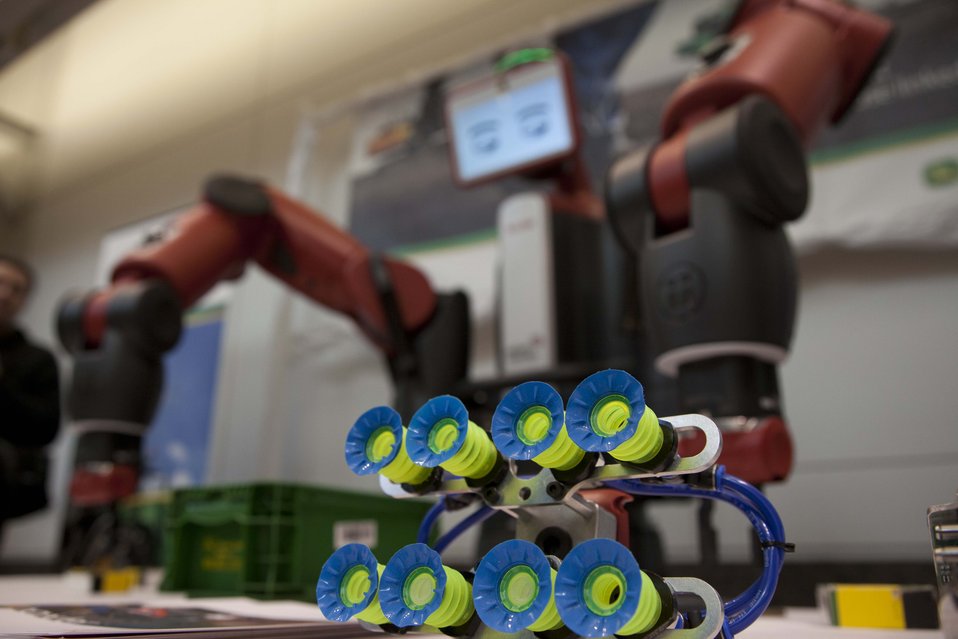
AEMC Summit

Baxter can be fitted with different hands to complete a variety of tasks. Pictured in the foreground is an attachment that uses a vacuum suction to allow Baxter to pick up items like paper.